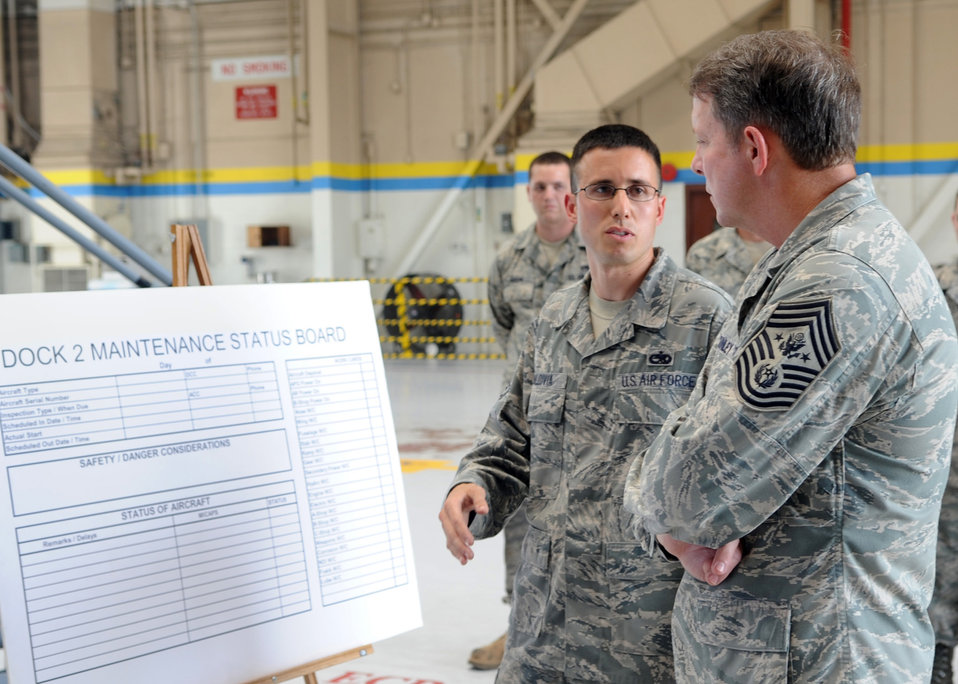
CMSAF visits Seymour Johnson

Staff Sgt. Justin Baldivia, 4th Equipment Maintenance Squadron, explains hydraulic purification capabilities for the F-15E Strike Eagle to Chief Master Sgt. of the Air Force Rodney McKinley on Seymour Johnson Air Force Base, June 12. Chief McKinley is the 15th CMSAF and serves as adviser to the Chief of Staff and the Secretary of the Air Force on issues regarding the enlisted force.